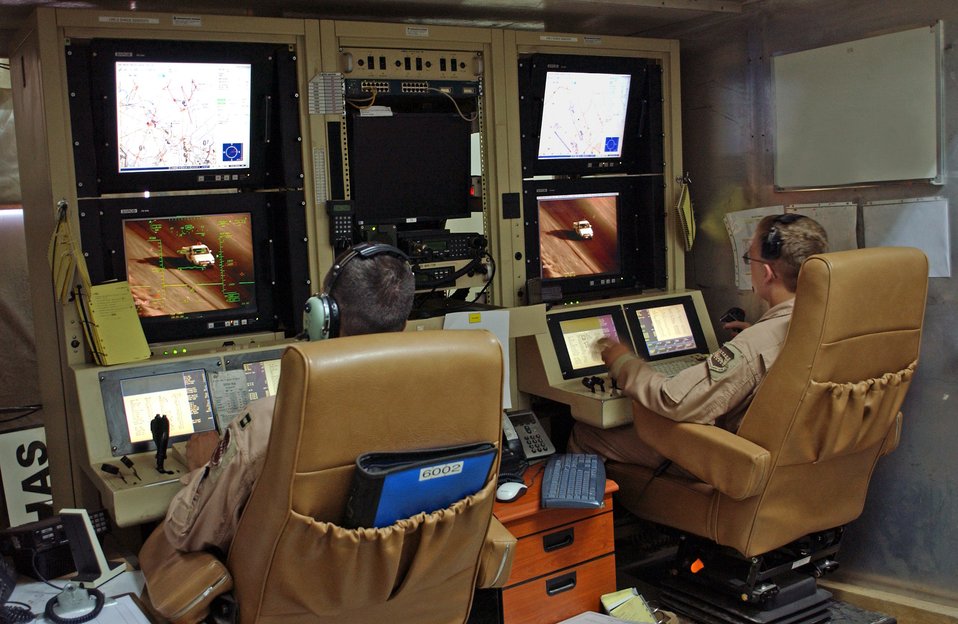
Predator soars to record number of sorties

Capt. Richard Koll, left, and Airman 1st Class Mike Eulo perform function checks after launching an MQ-1 Predator unmanned aerial vehicle Aug. 7 at Balad Air Base, Iraq. Captain Koll, the pilot, and Airman Eulo, the sensor operator, will handle the Predator in a radius of approximately 25 miles around the base before handing it off to personnel stationed in the United States to continue its mission. Both are assigned to the 46th Expeditionary Reconnaissance Squadron.